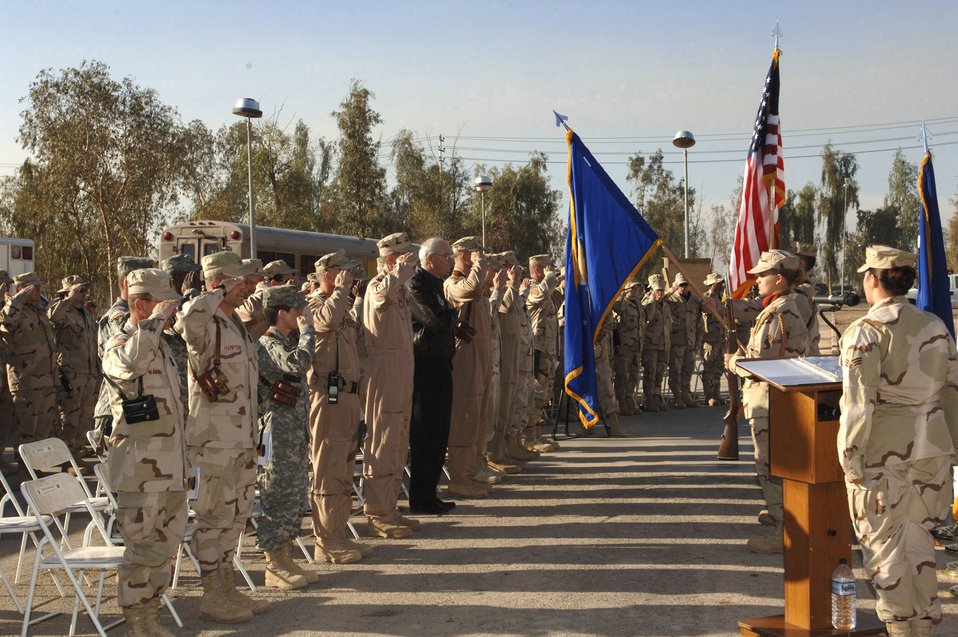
Staging facility opens

BALAD AIR BASE, Iraq (AFPN) -- Secretary of the Air Force Michael Wynne, along with service members from Balad Air Base and Logistical Support Area Anaconda, pays respect to the flag during the opening of the Contingency Aeromedical Staging Facility.